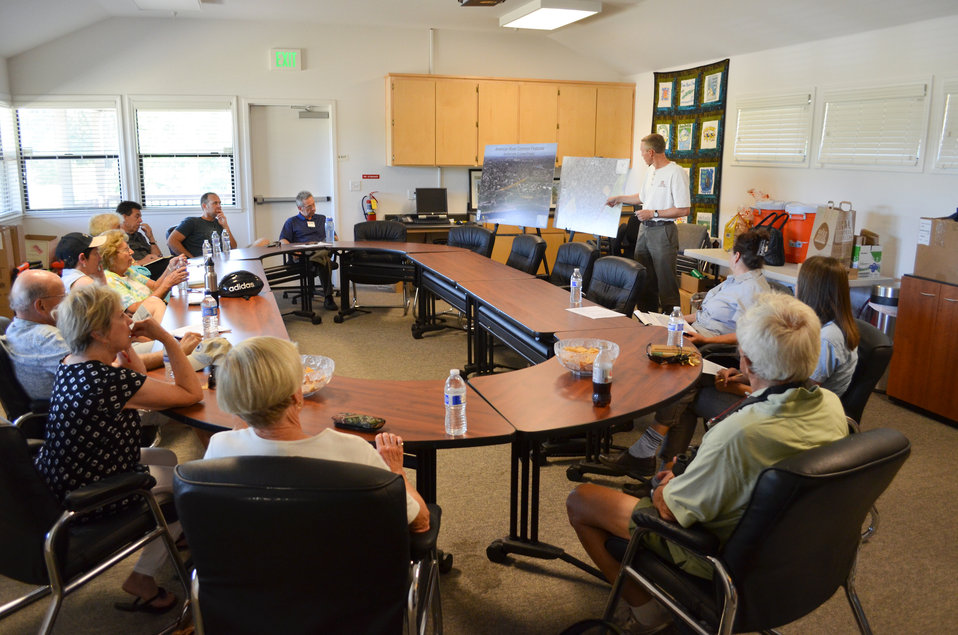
Levee work topic of public meeting in Carmichael

Mark Boedtker (standing), an engineering technical lead for the U.S. Army Corps of Engineers Sacramento District, answers questions about upcoming levee work along the American River in Carmichael, Calif., June 20, 2013. The district held the meeting to explain the project's purpose and possible impacts to the local residents, schools and businesses.